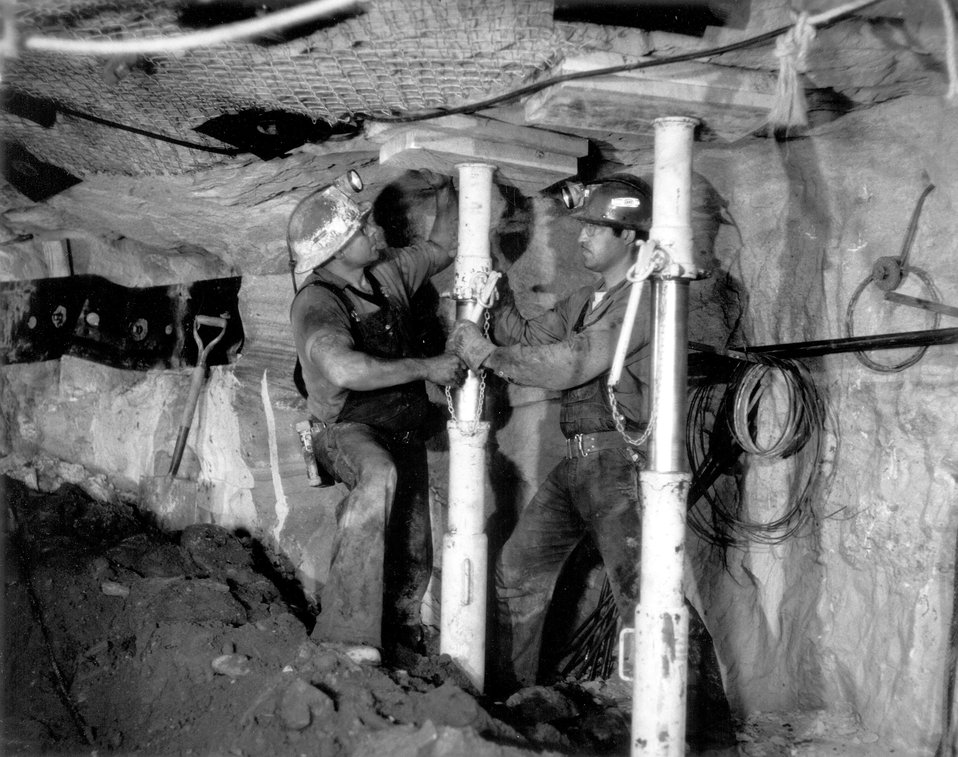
Miners are installing hydraulic roof jacks for temporary support of the roof of a working place. After removal of the ore, the jacks will be collapsed and salvaged and the area will cave in a controlled manner. c. 1968